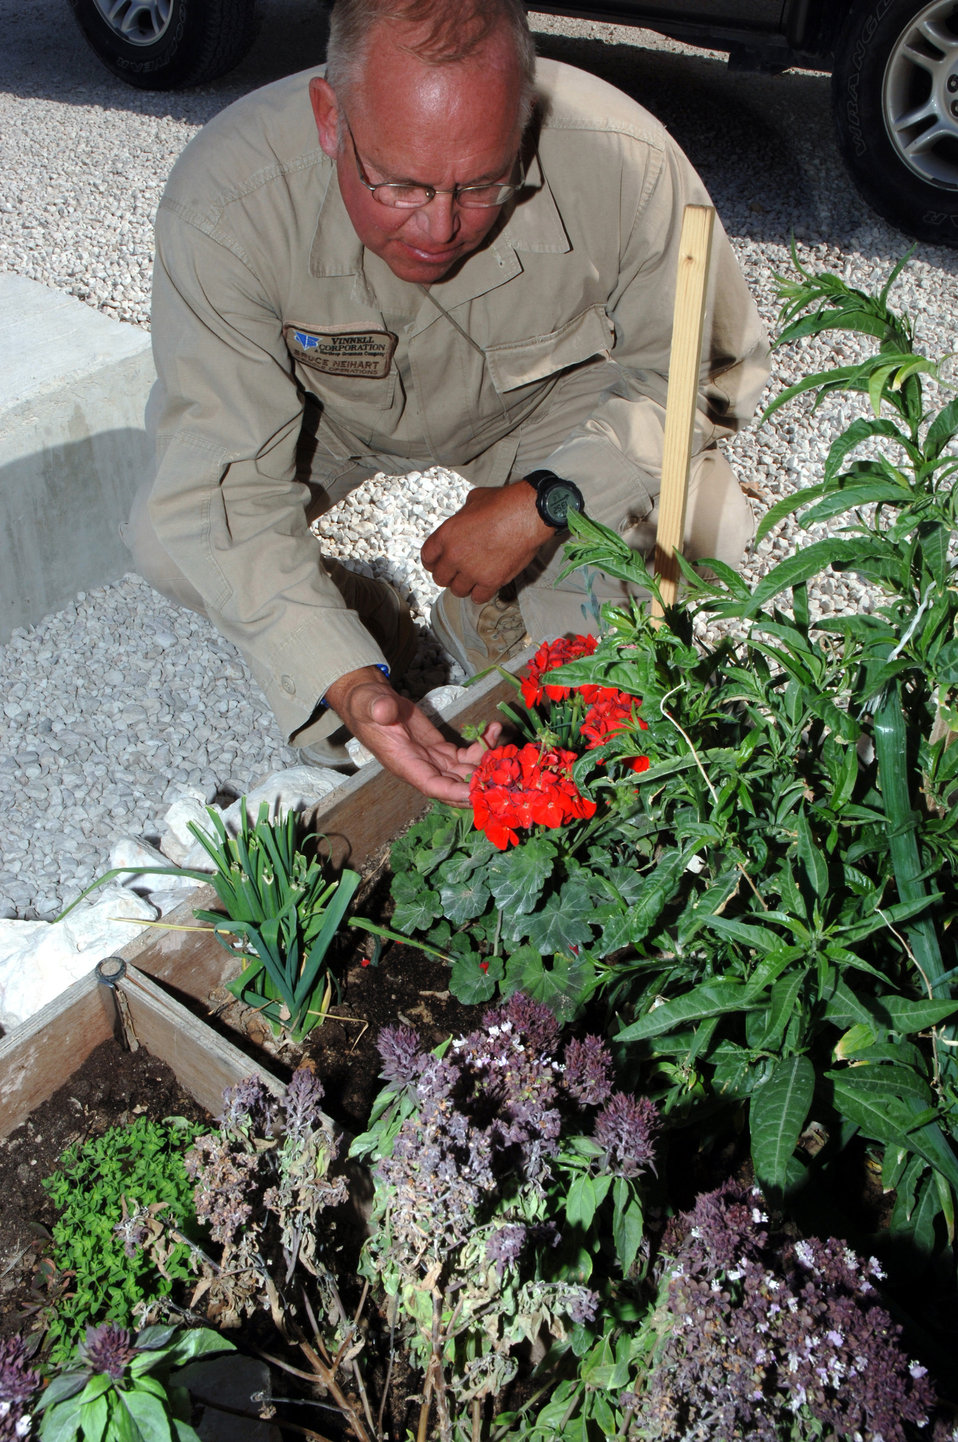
Garden in the desert

Bruce Neihart, a contractor at a deployed location in Southwest Asia checks the growth of his side project -- a mini garden with flowers, herbs, and tomatoes Wednesday, Mar. 8, 2006. He is well known for his tomatoes and other veggies sprouting up here in the desert. Mr. Neihart is with the 379th Expeditionary Logistics Readiness Squadron.